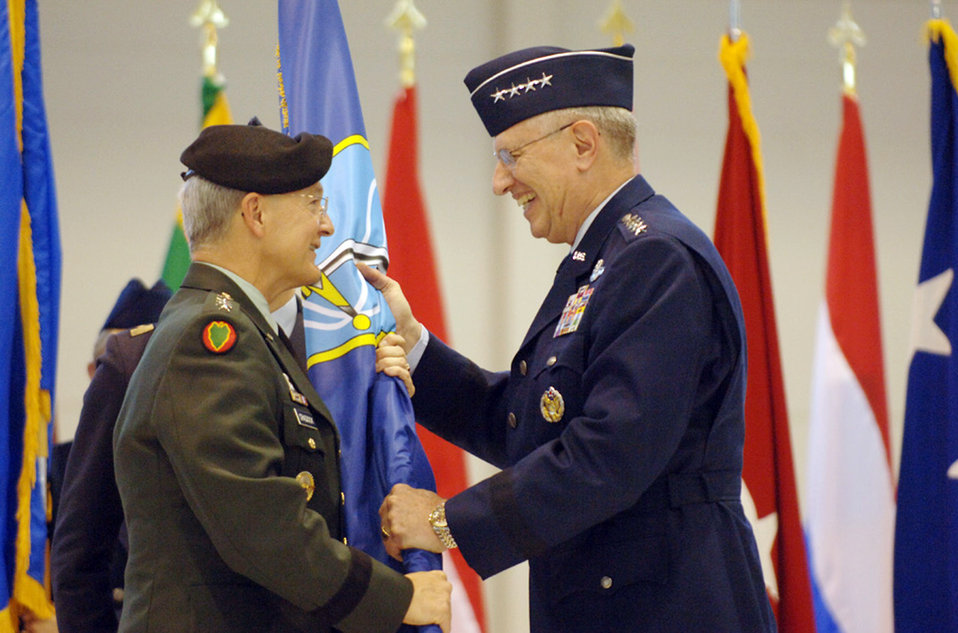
General Brady assumes command of USAFE

Gen. Roger A. Brady accepts the NATO Allied Air Component flag from Gen. John Craddock during the Jan. 17 assumption of command ceremony at Ramstein Air Base, Germany. As USAFE commander, General Brady also has three other titles: commander, Allied Air Component Command Ramstein; air component commander, U.S. European Command, Ramstein AB, Germany; and director, Multinational Joint Air Power Competence Center, Kalkar, Germany. General Craddock is the Supreme Allied Commander, Europe.